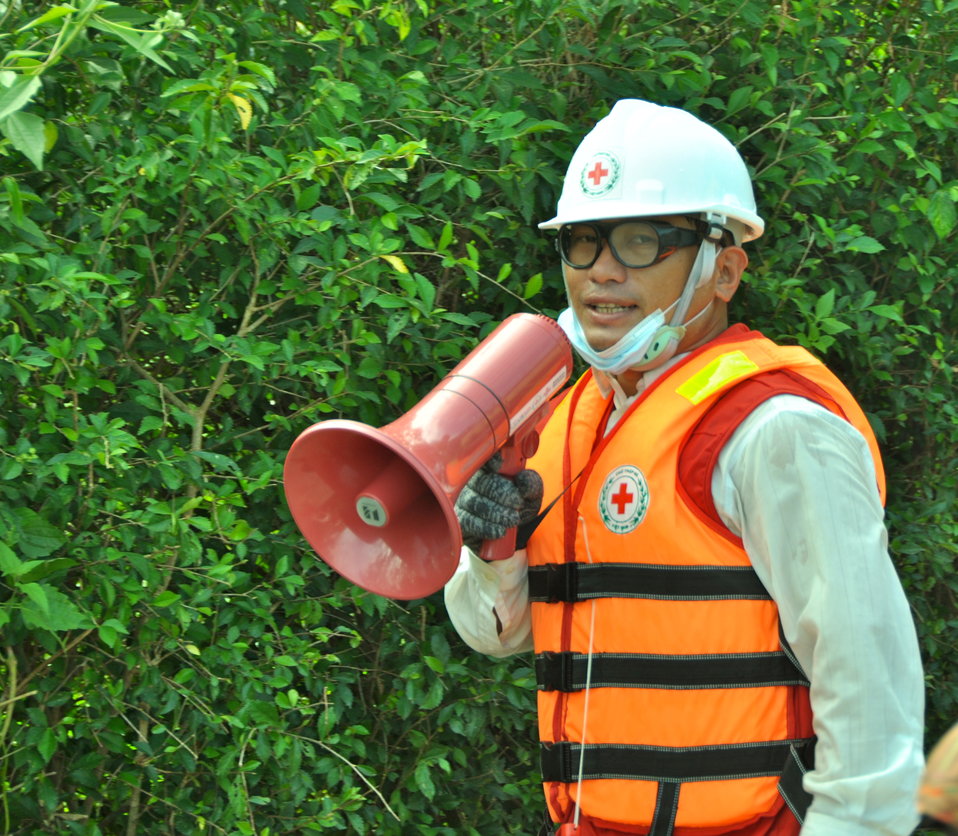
USAID, Red Cross Support Disaster Response Drill in Duy Hoa Commune, Quang Nam Province

Duy Hoa Commune, Quang Nam Province
December 5, 2012